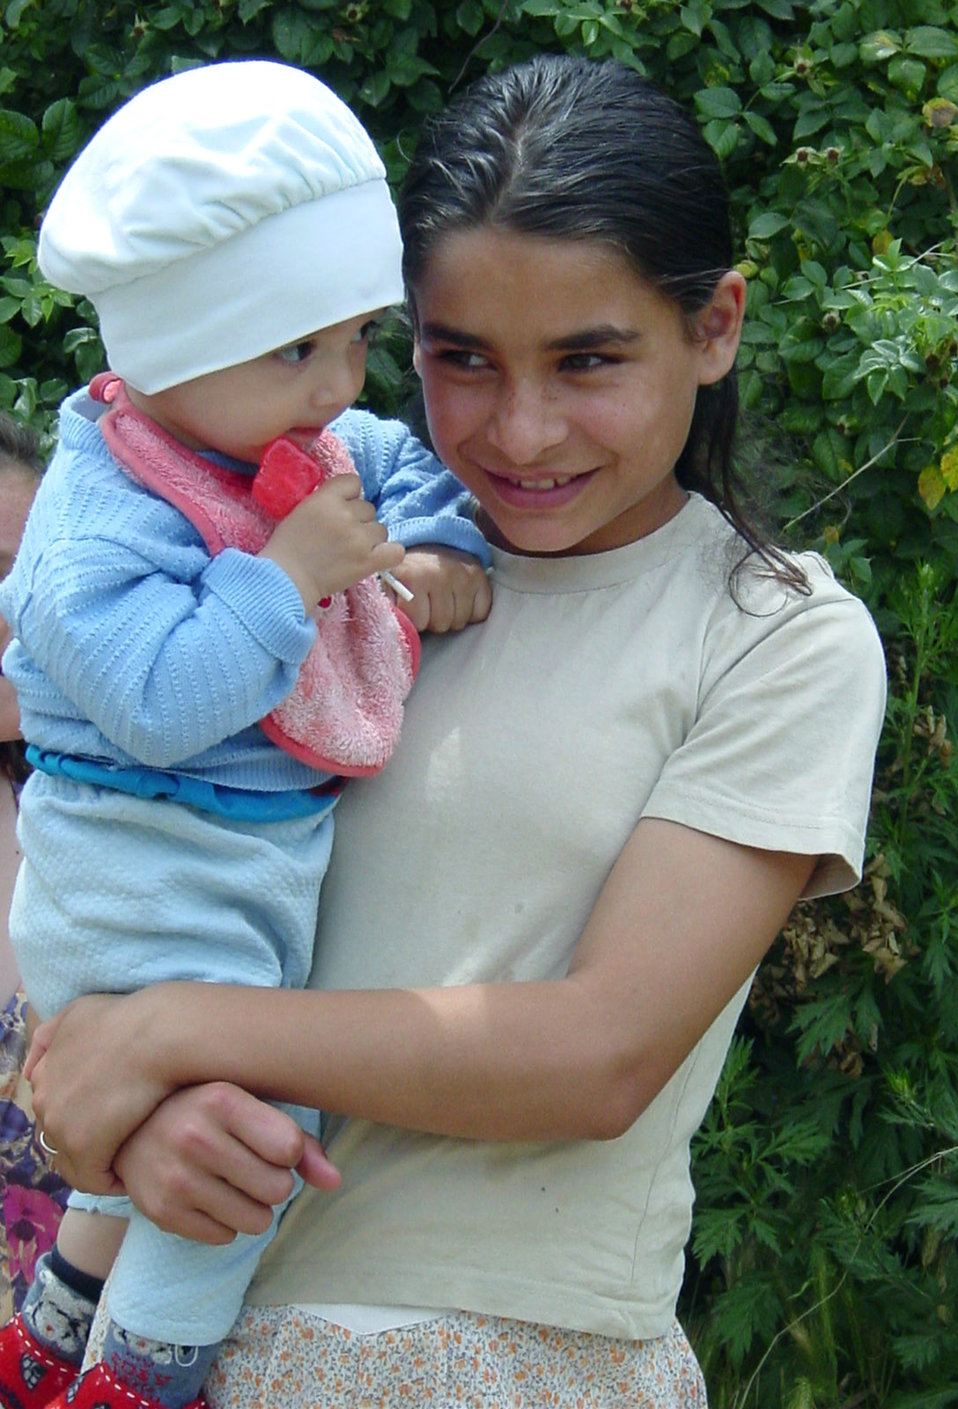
'American family' supports NATO, humanitarian effort

PRISTINA, Kosovo -- Children at a local shelter enjoy candy delivered by the U.S. servicemembers serving at Kosovo Force headquarters. KFOR's